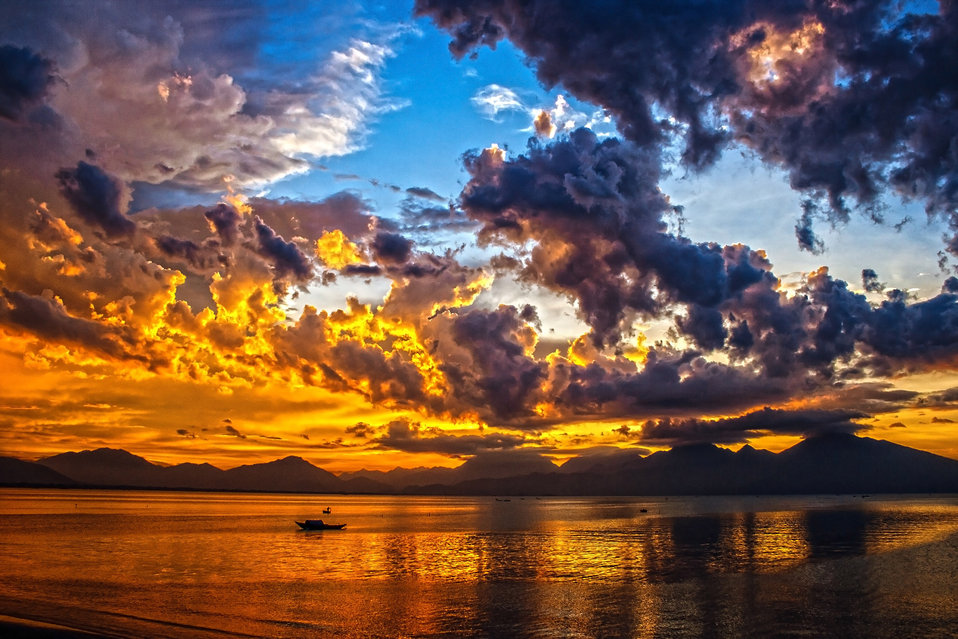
Alone in sundown

A small boat anchored in the bay of danang, central vietnam..